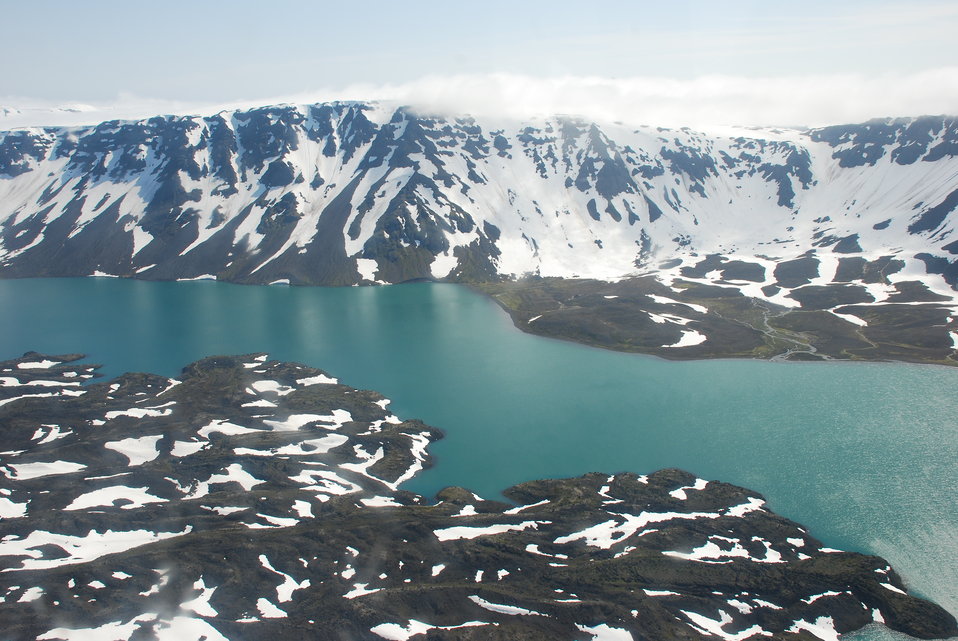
Lake Emmons

Alaska Peninsula National Wildlife Refuge